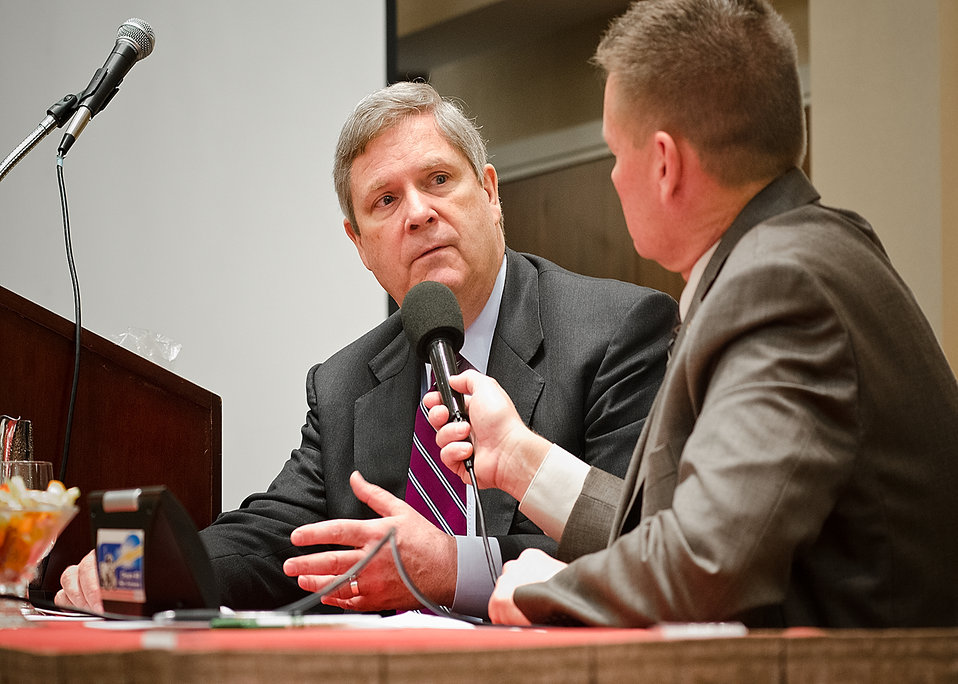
Agriculture Secretary Tom Vilsack (left) interviewed with Agritalk Host Mike Adams (right), during a meeting with the Missouri Farm Bureau in Washington, D.C., on Tuesday, March 20, 2012. Agritalk, The Voice of Rural America is a radio network based in St. Louis, Missouri reaching out to the American Mid-West.